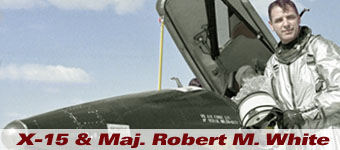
X-15 Altitude Record

Maj. Robert M. White and the X-15 experimental aircraft history spotlight graphic